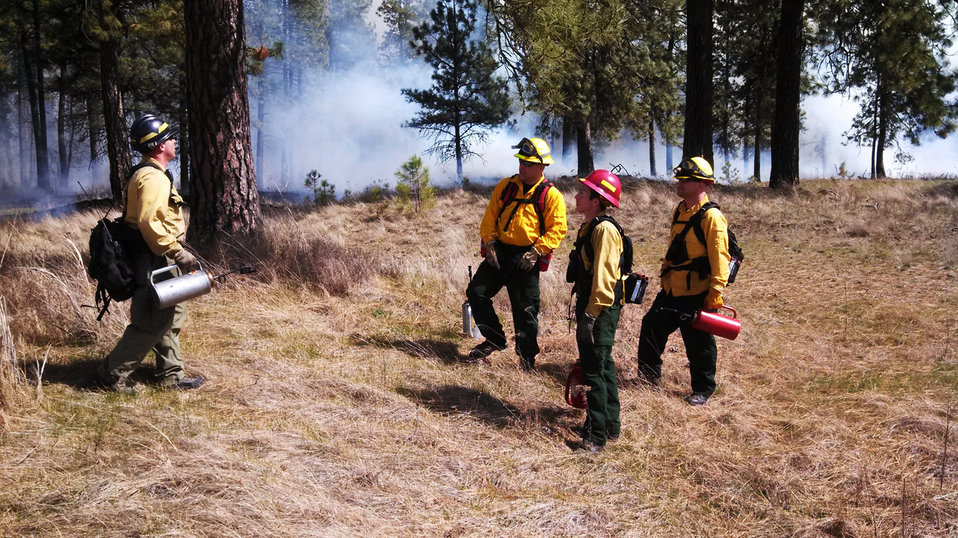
Fire Implementation

The Engine Module Supervisor from the Inland Northwest National Wildlife Refuge Complex works with fire fighters from Spokane Valley Fire Department during ignition activities.